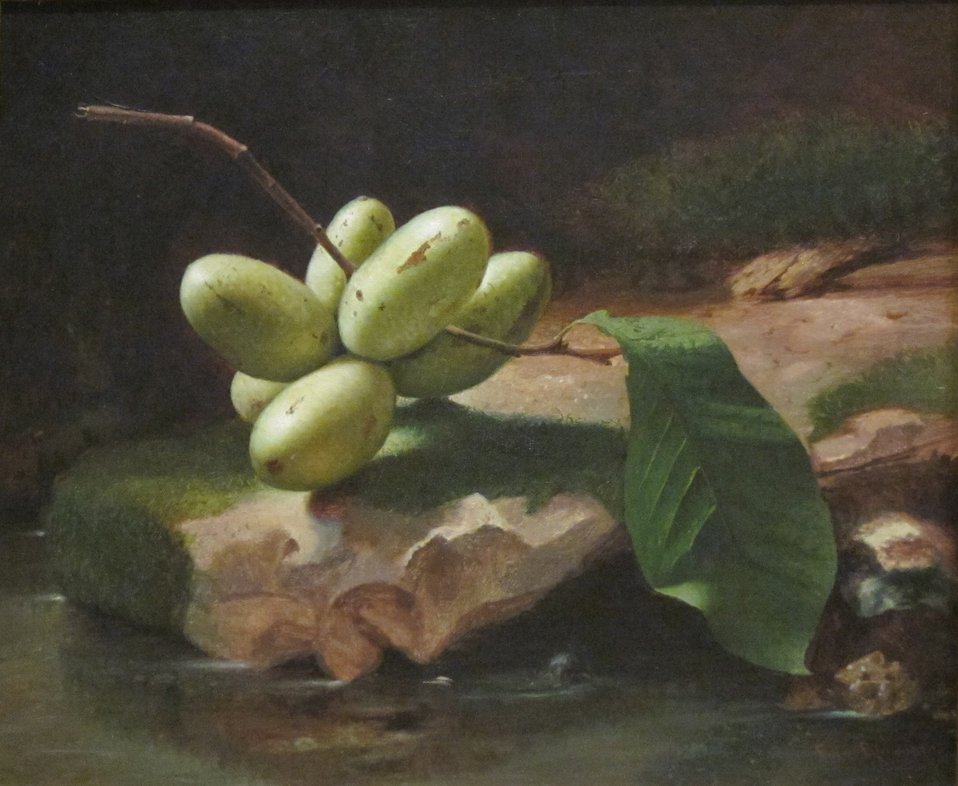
'Still-life with Paw Paws' Edward Edmondson, Jr., Dayton Art Institute